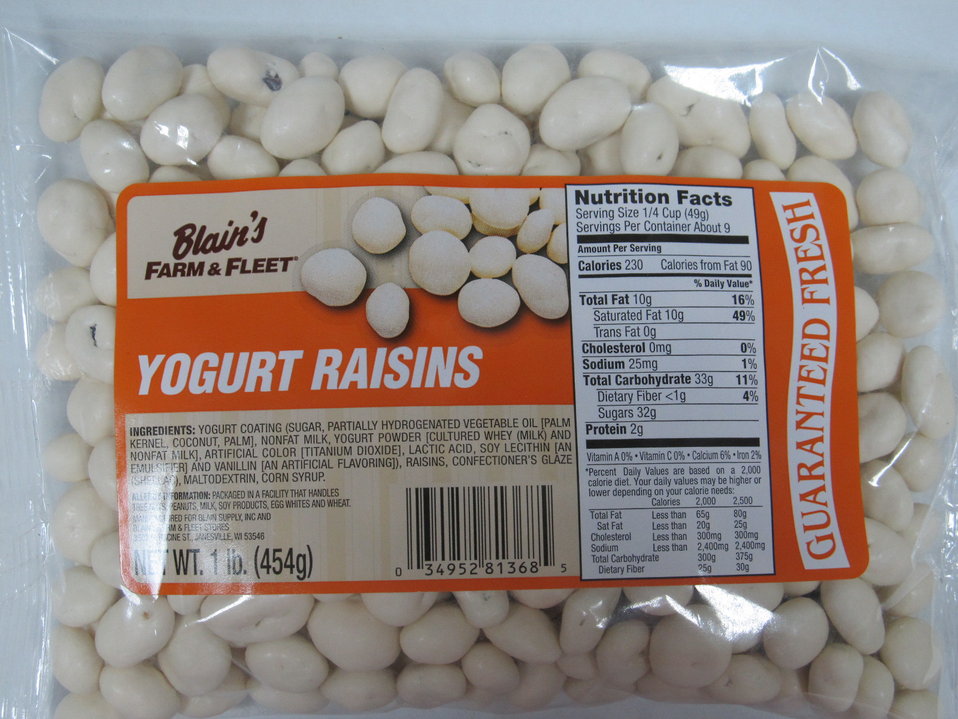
RECALLED - Yogurt Raisins and Granola Mix

December 22, 2011 - Eillien's Candies, Inc. Issues a Voluntary Recall of Select Candy Items Due to Possible Health Risk.